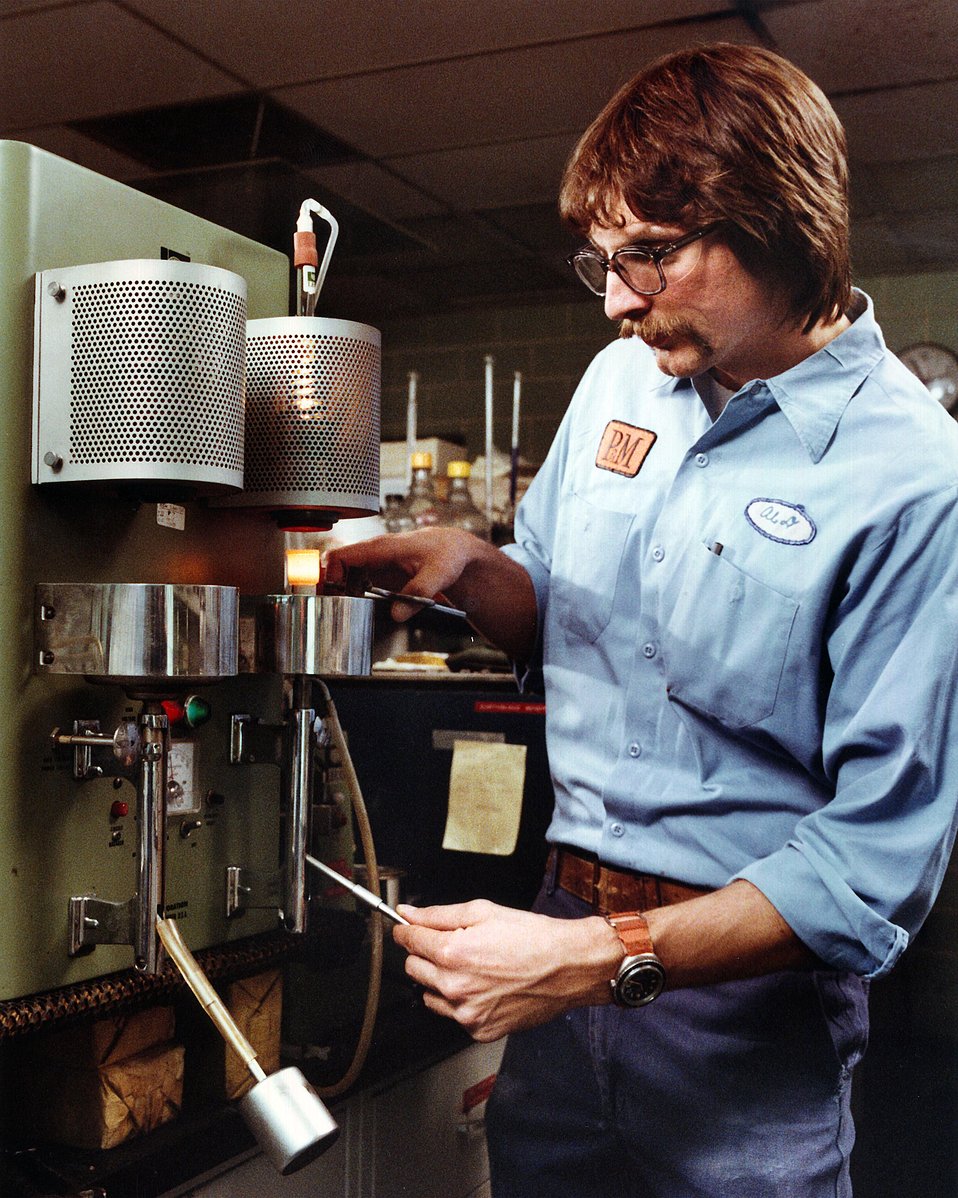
ALAN DAVIS, TECHNICAL SPECIALIST, OPERATES LECO SULFUR ANALYZER.